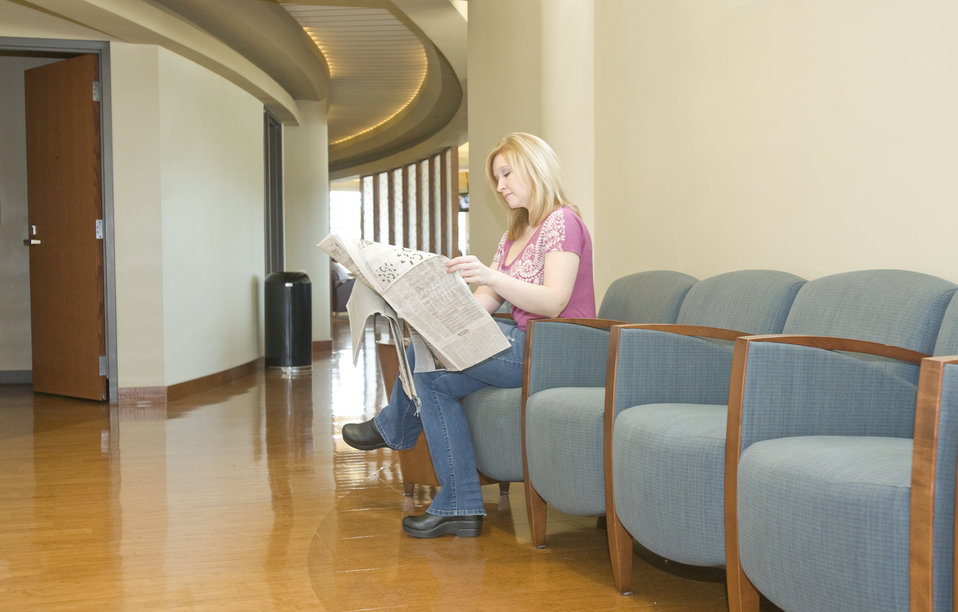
This woman was seated in the waiting area to be called in to an examination room in order to be seen by a healthcare provider. It is unknown as to why this woman had come to this clinic. While waiting, she was reading a newspaper to pass the time.